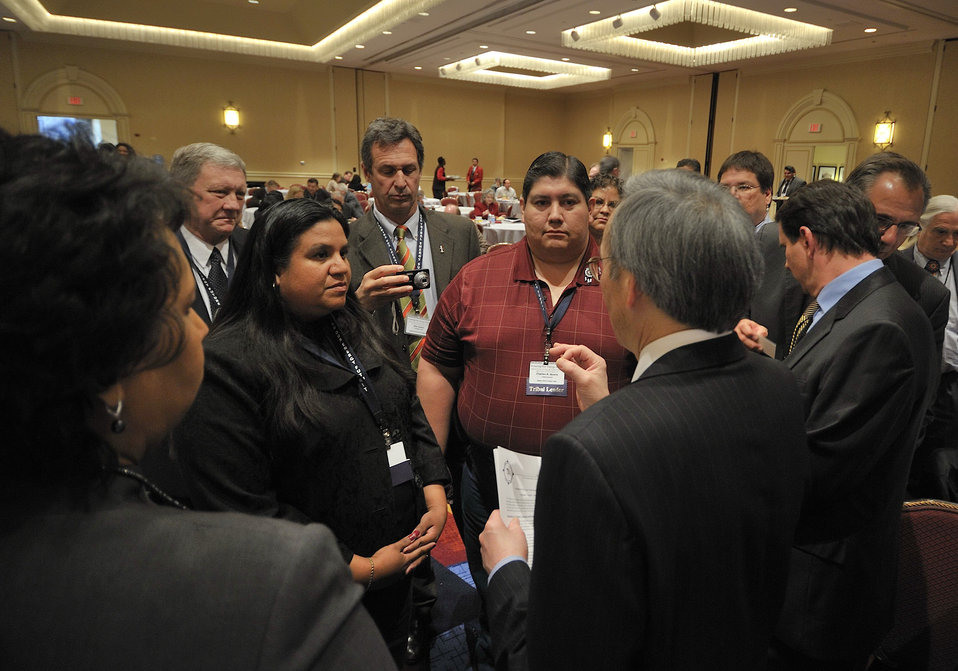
Tribal Energy Summit

Secretary Chu engages up close with Summit participants during the lunch period